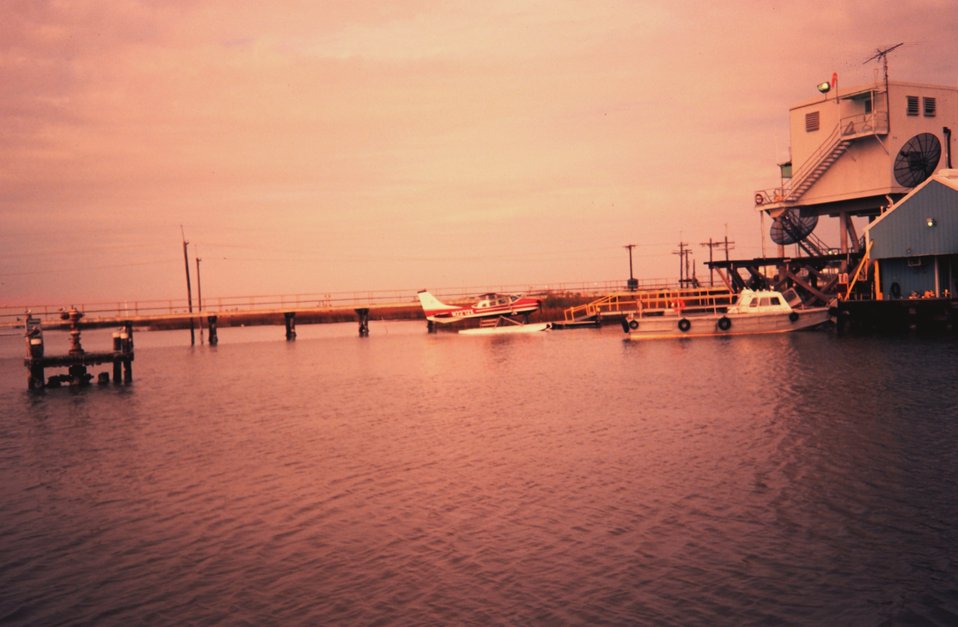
Greenhill Petroleum facility on East Timbalier Island